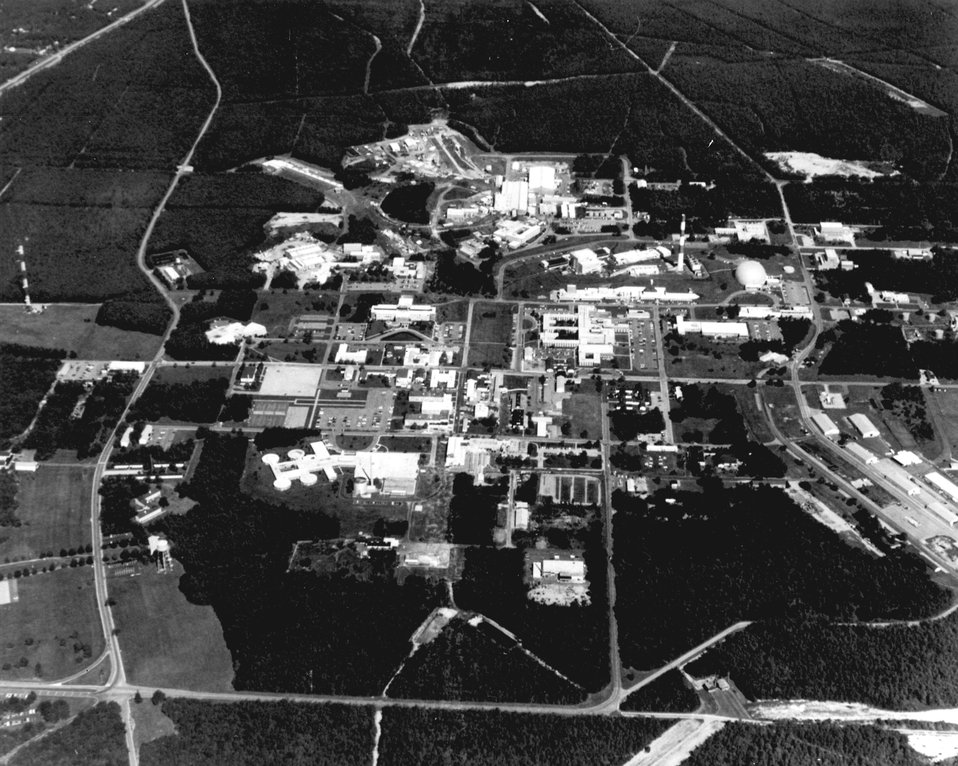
Aerial view of the U.S. Atomic Energy
Commission's Brookhaven National Laboratory